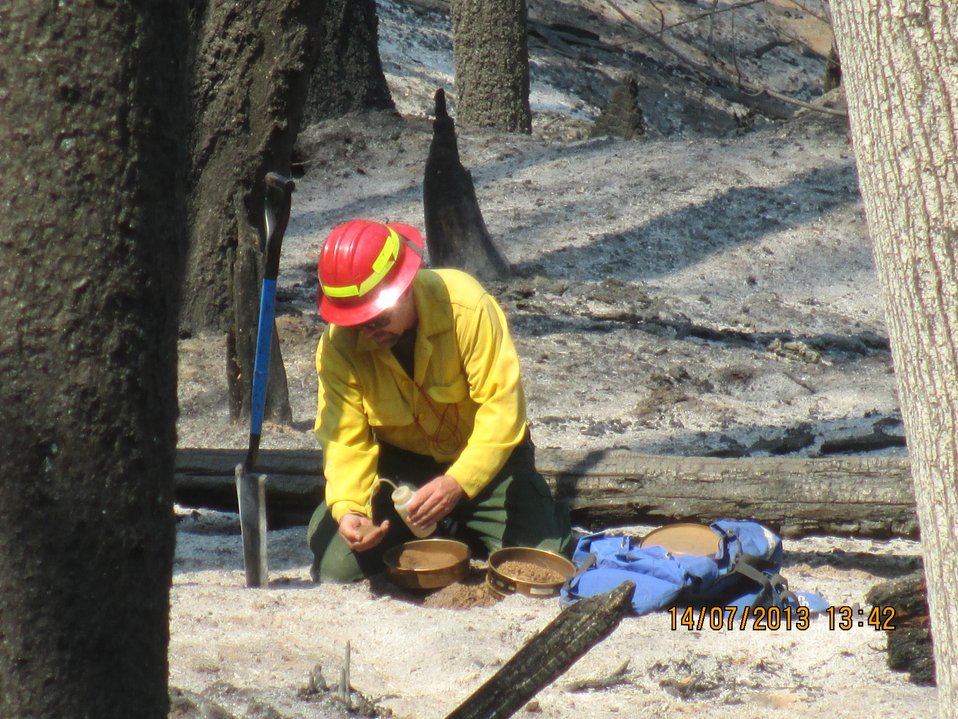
Burned Area Emergency Response (BAER) soil scientist assesses burned area of Rim Fire. BAER teams start work even before the fire is completely extinguished at the Rim Fire. BAER is a rapid assessment of burned watersheds by a BAER team to identify imminent post-wildfire threats to human life and safety property and critical natural or cultural resources on National Forest System lands and take immediate actions to implement emergency stabilization measures before the first major storms. Fires result in loss of vegetation exposure of soil to erosion and increased water runoff that may lead to flooding increased sediment debris flows and damage to critical natural and cultural resources. BAER team members implement seeding and mulching installation to prevent erosion, erect temporary water run-off control structures that will protect recovering areas, and installation of warning signs, replace safety related facilities, remove safety hazards, prevent permanent loss of habitat for threatened and endangered species, and prevent the spread of noxious weeds and protect critical cultural resources. The Rim Fire in the Stanislaus National Forest near in California began on Aug. 17, 2013 and is under investigation. The fire has consumed approximately 256,169 acres and is 84% contained.